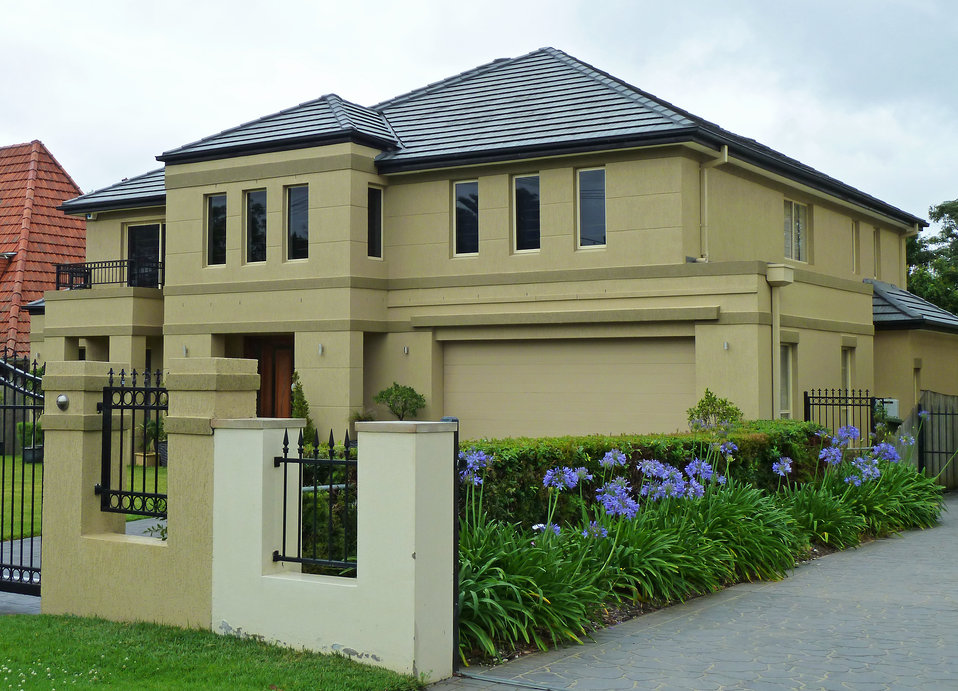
133 Springdale Road, East Killara, New South Wales, Australia.